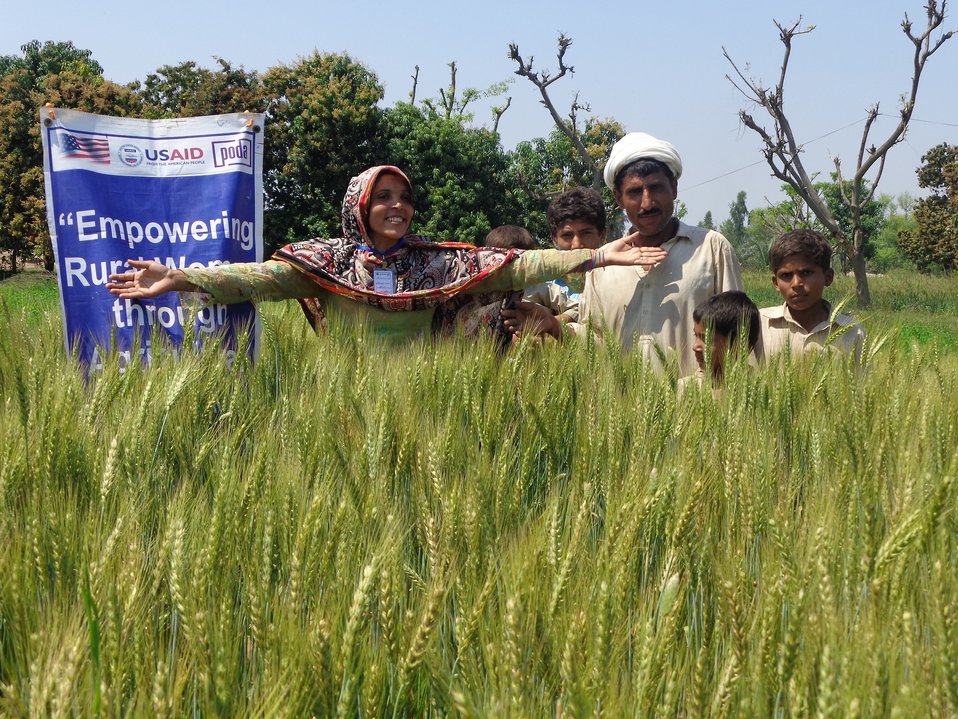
Ms. Nuzhat Bibi (Project Beneficiary) with her family in her wheat field-PODA MZG